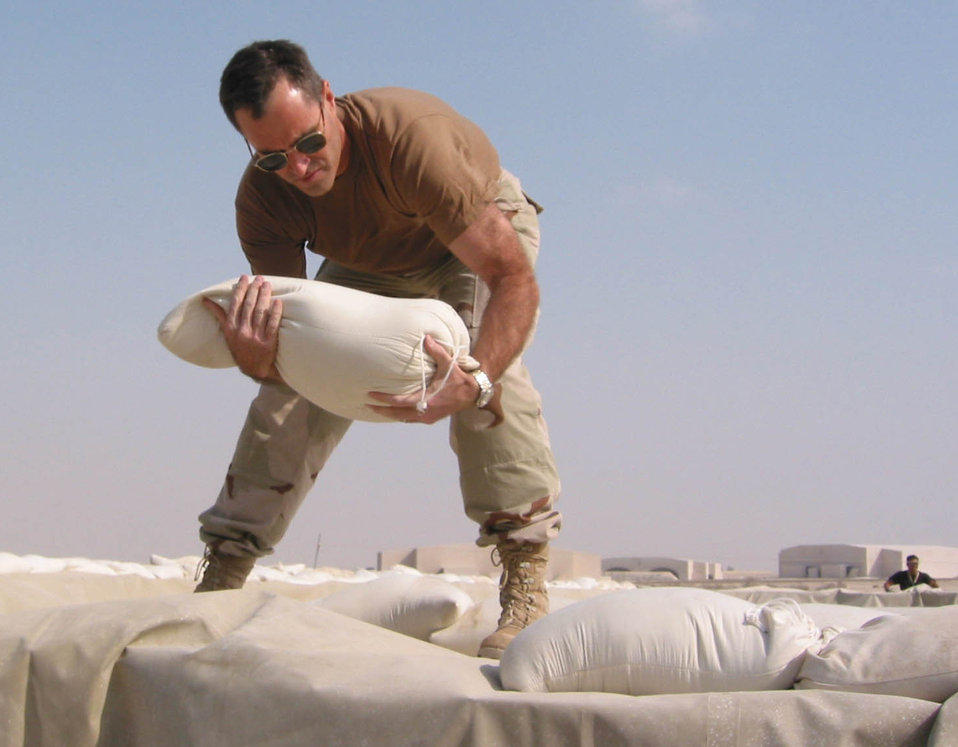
Throwing it down

OPERATION ENDURING FREEDOM -- Col. Greg Augst, 380th Air Expeditionary Wing commander, throws his share of sandbags during the two-day effort to secure liners for the fuel farm expansion project at a forward-deployed location.